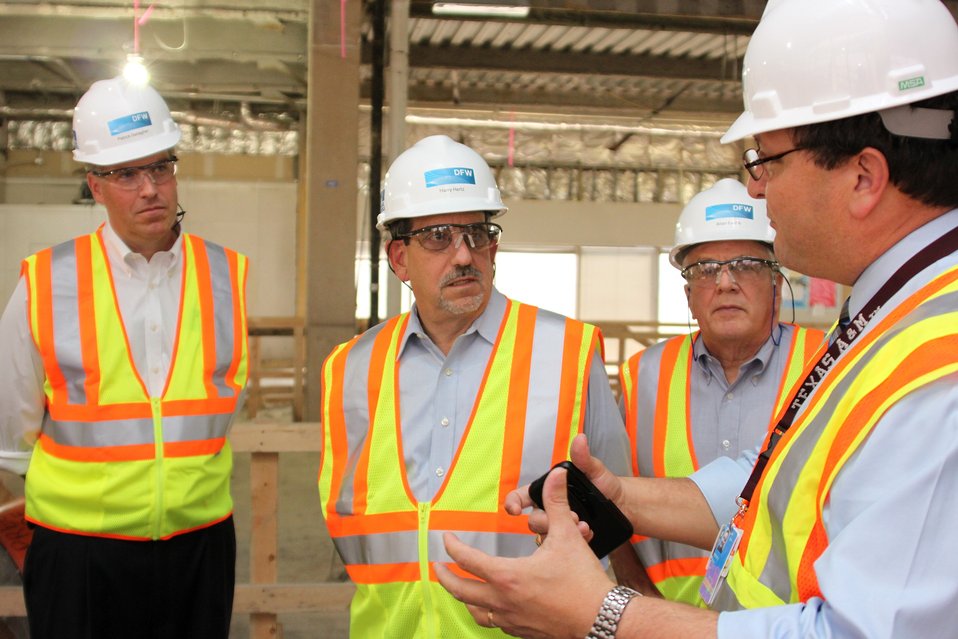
DFW Tour

Perfecto M. Solis (far right), VP for DFW Airport Authority briefs (Left to Right) Pat Gallagher, Harry Hertz and Allan Eustis of NIST as part of a tour of the ongoing renovation of the Dallas Fort Worth (DFW) Airport. Baldrige Award winner Freese & Nichols Inc. is an engineering firm participating in the renovation.